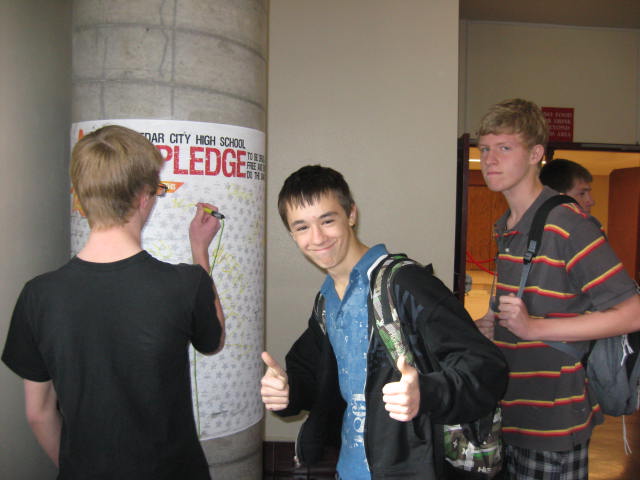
NDFW Assembly in Cedar City, UT

The students signed a pledge to be drug and alcohol free.